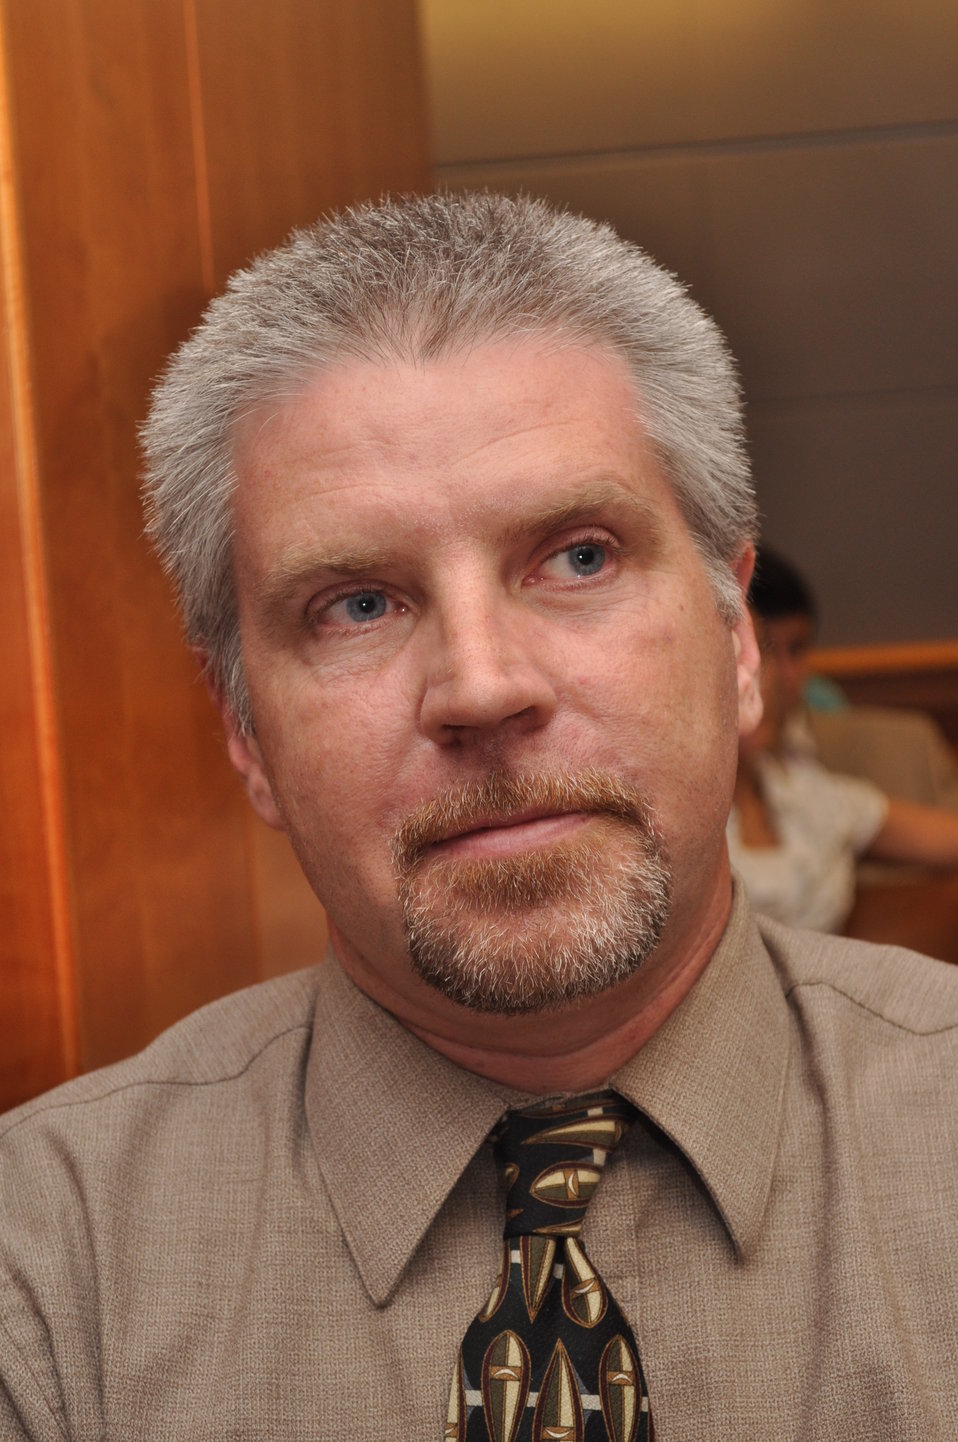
Engineers and Economists

At the August, 2011 Open Meeting the FCC recognized engineers and economists.